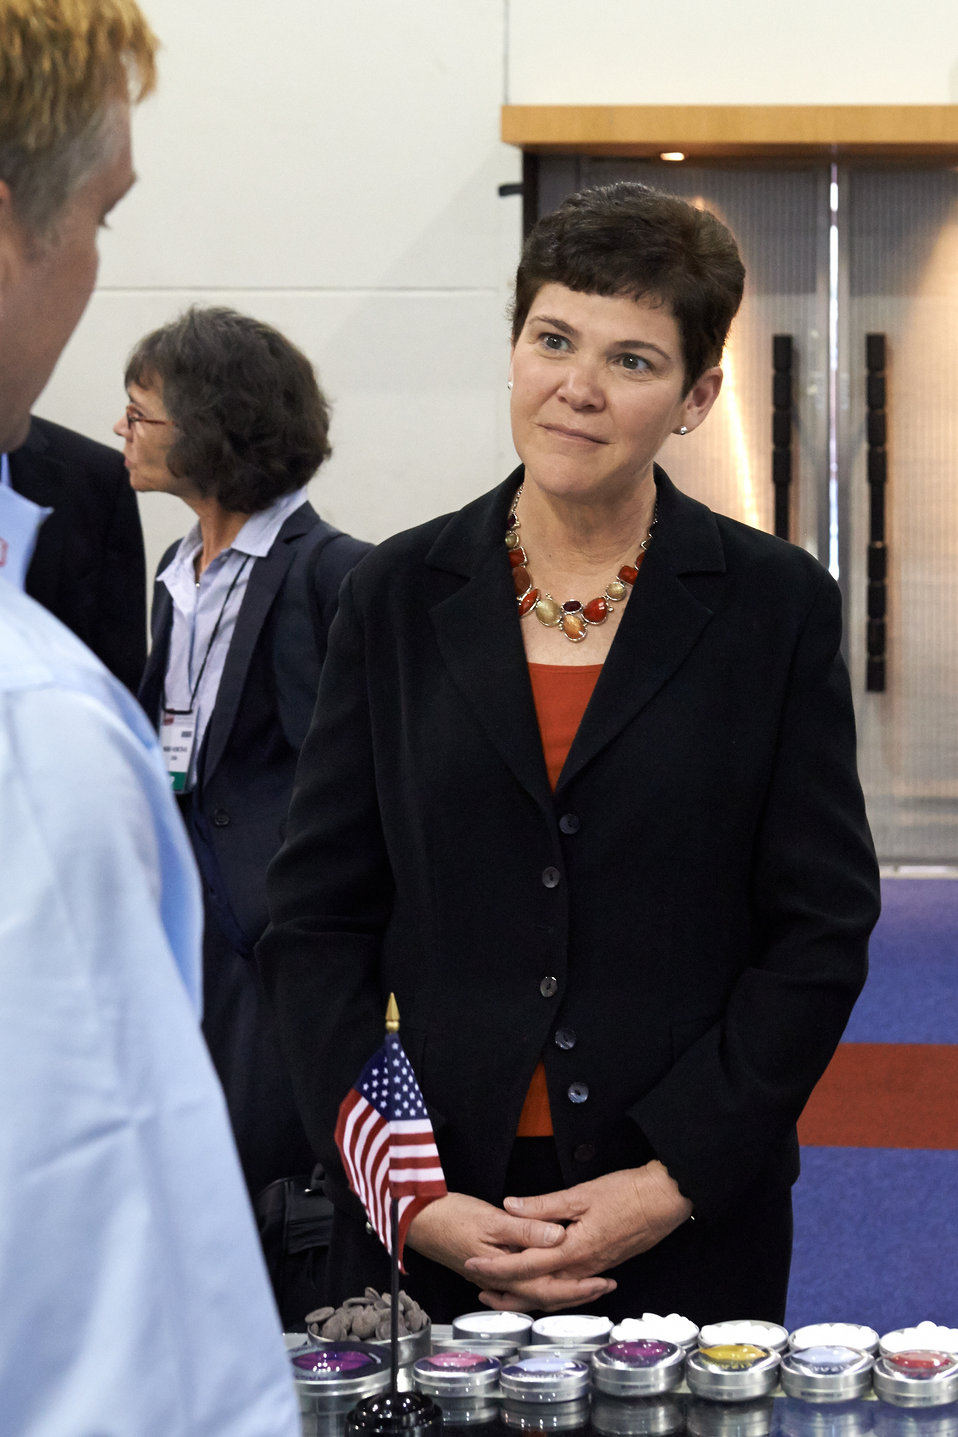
Agriculture Deputy Secretary Krysta Harden on trade mission in Johannes burg, South Africa on Wednesday, Sep. 18, 2013. Agriculture Deputy Secretary Krysta Harden led a trade mission to the Sub-Saharan Africa Business Round Table to promote U. S. agricultural trade and investment in the region, which is a long-term goal of the initiative. The trade mission includes 17 U.S. companies and 15 agricultural trade associations that represent a variety of products such as snack foods, beverages, fruit, nuts, and more.